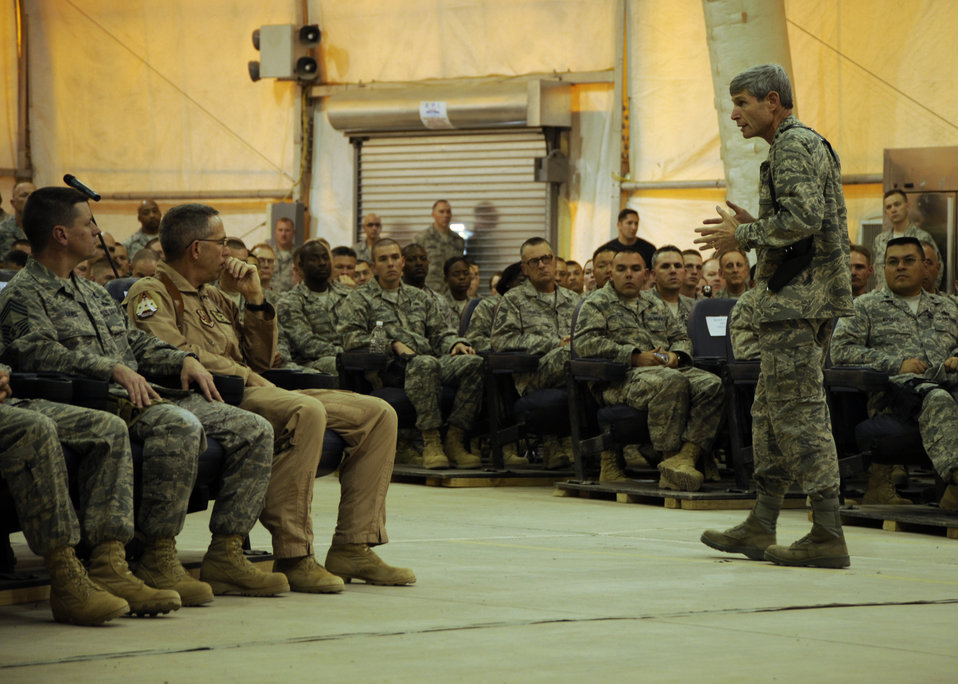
Chief of Staff tours Iraq

Air Force Chief of Staff Gen. Norton Schwartz speaks to Airmen from the 447th Air Expeditionary Group at Sather Air Base, Iraq, Oct. 24. This is the CSAF's first trip to Iraq since assuming his current position as the Air Force chief of staff.